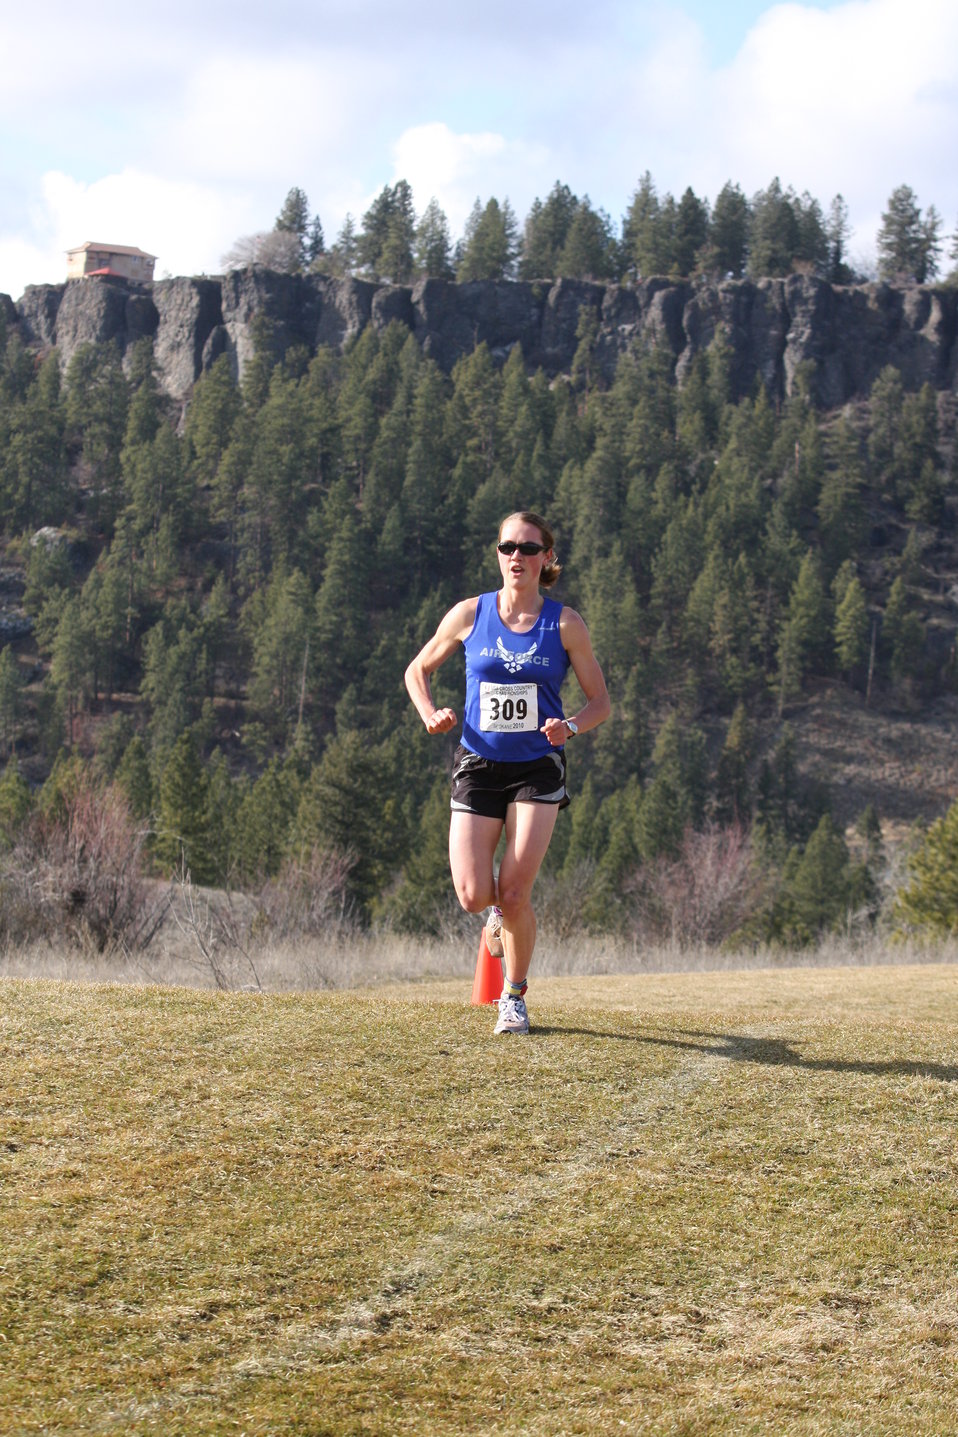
Air Force cross country teams win Armed Forces title

2nd Lt. Caroline White won the Armed Forces Cross Country Championship Feb. 13, 2010, at Plantes Ferry Sports Complex, Spokane Valley, Wash. She finished with a time of 29:27, a pace of 5:55 minutes per mile. She is assigned to the 80th Operations Support Squadron at Sheppard Air Force Base, Texas.